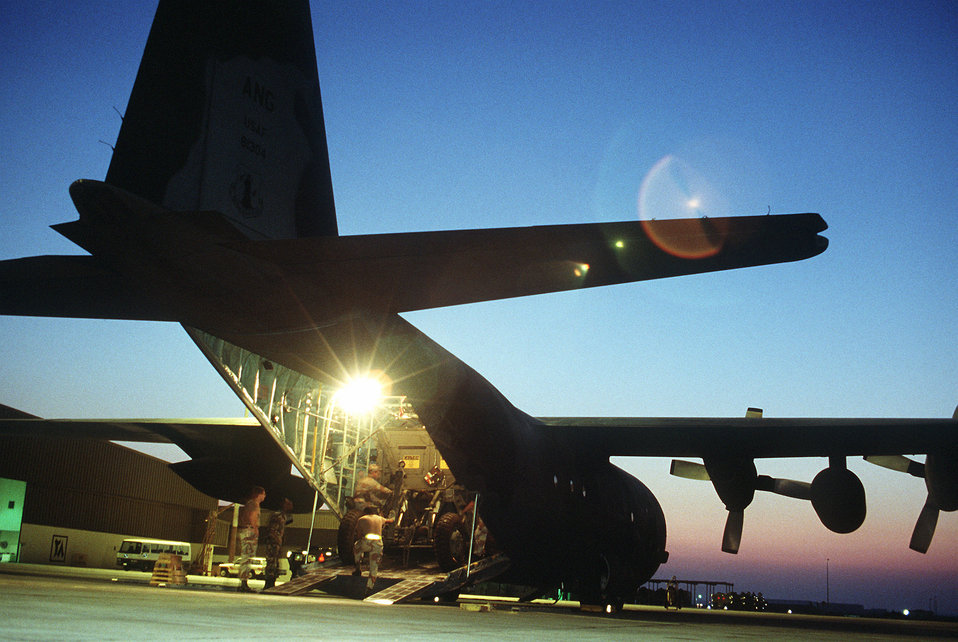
C-130 Hercules being loaded

1990's -- A crew of the 181st Tactical Airlift Squadron, Texas Air National Guard, load equipment of the 435th Airlift Control Element onto a C-130 Hercules transport aircraft during Operation Desert Shield.